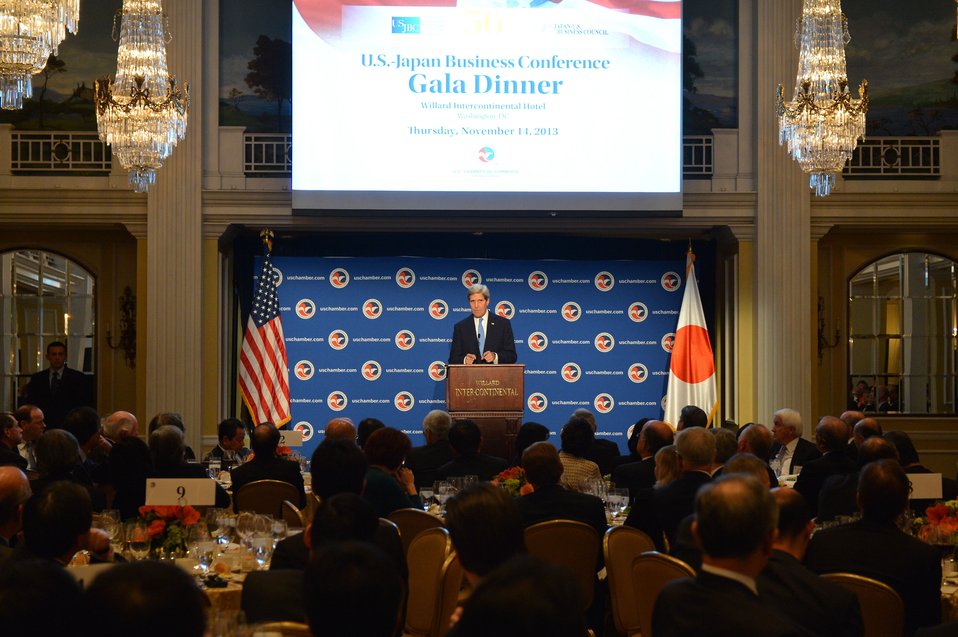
Secretary Kerry Delivers Remarks for the 50th U.S.-Japan Business Conference

U.S. Secretary of State John Kerry delivers remarks at a dinner for the 50th U.S.-Japan Business Conference in Washington, D.C., on November 14, 2013.